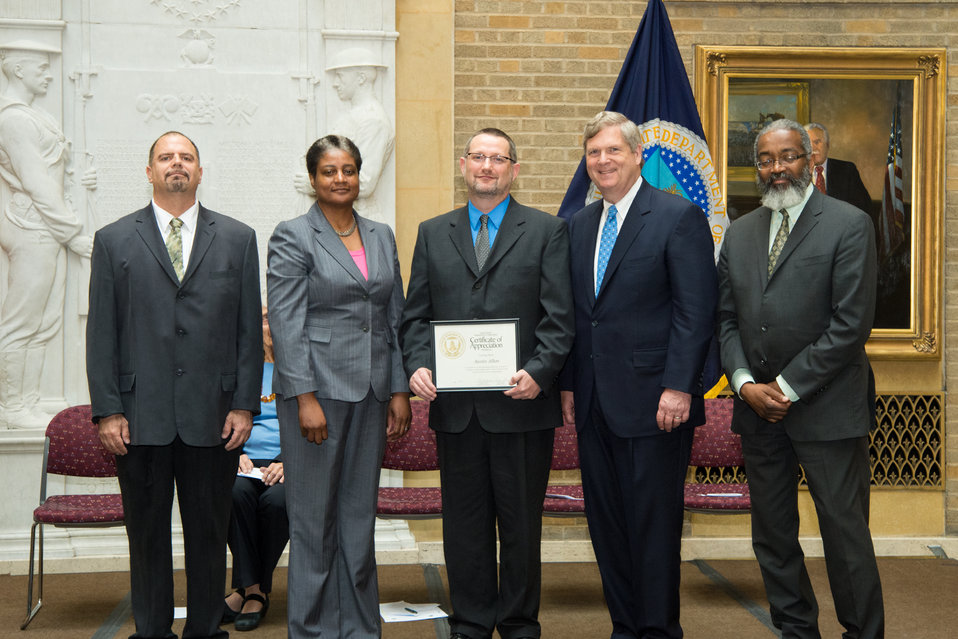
U.S. Department of Agriculture (USDA) Food Nutrition Service (FNS) Arkansas Austin Allen receives the Unsung Hero Award from USDA’s Organization of Professional Employees (OPEDA) President Louis Iacoletti, USDA FNS Jackie Butler, Agriculture Secretary Tom Vilsack and USDA Assistant Secretary for Administration Dr. Gregory Parham at USDA in Washington, D.C. on Wednesday, May 7, 2014.